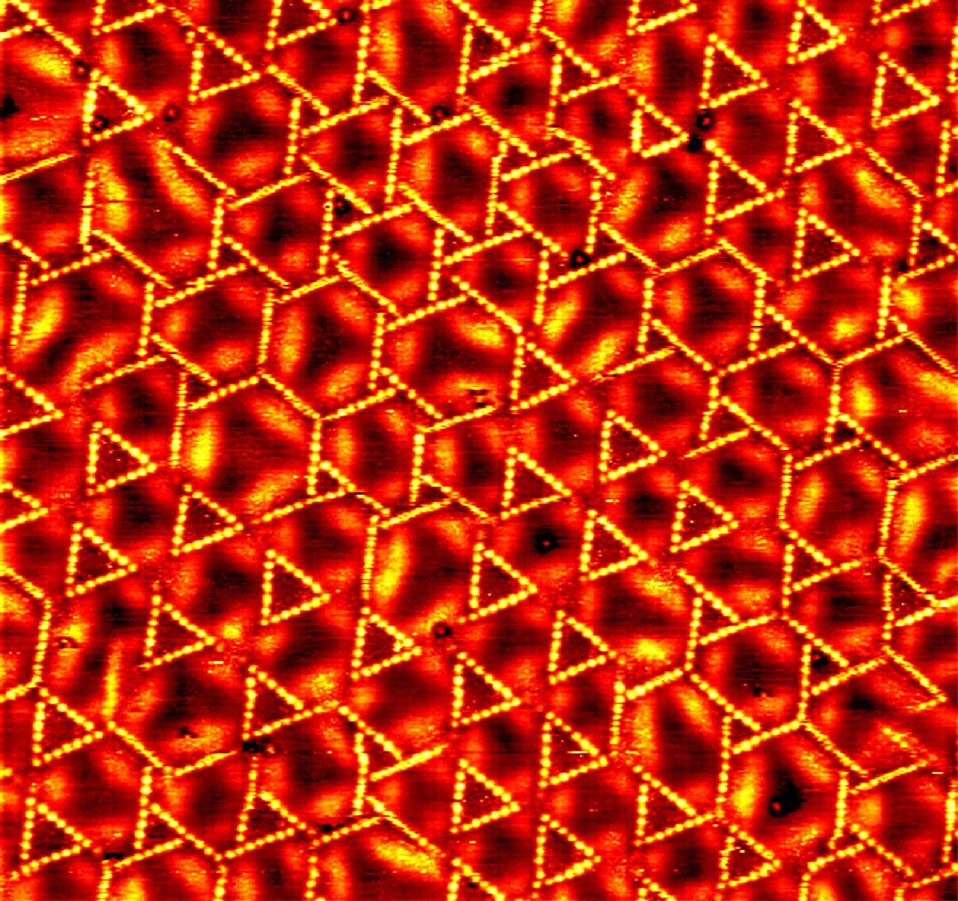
SULFUR ATOM NANOCLUSTERS ON A COPPER LAYER DEPOSITED ON A RUTHENIUM SINGLE CRYSTAL.

BROOKHAVEN NATIONAL LABORATORY IS CONTRIBUTING TO THE NATIONAL PROGRAM IN NANOTECHNOLOGY, BOTH INDIVIDUALLY AND IN COLLABORATION WITH UNIVERSITIES AND OTHER NATIONAL LABORATORIES. THE INITIATIVE ENCOMPASSES A BROAD RANGE OF SCIENCE AND TECHNOLOGY, RANGING FROM TINY MICROCHIP DEVICES TO NEW 'ATOMIC' FORMS OF MATERIALS TO NEW PHENOMENA SUCH AS QUANTIZED ELECTRONIC AND MAGNETIC PHENOMENA IN ULTRA-THIN FILMS OR ORGANIC MOLECULES.